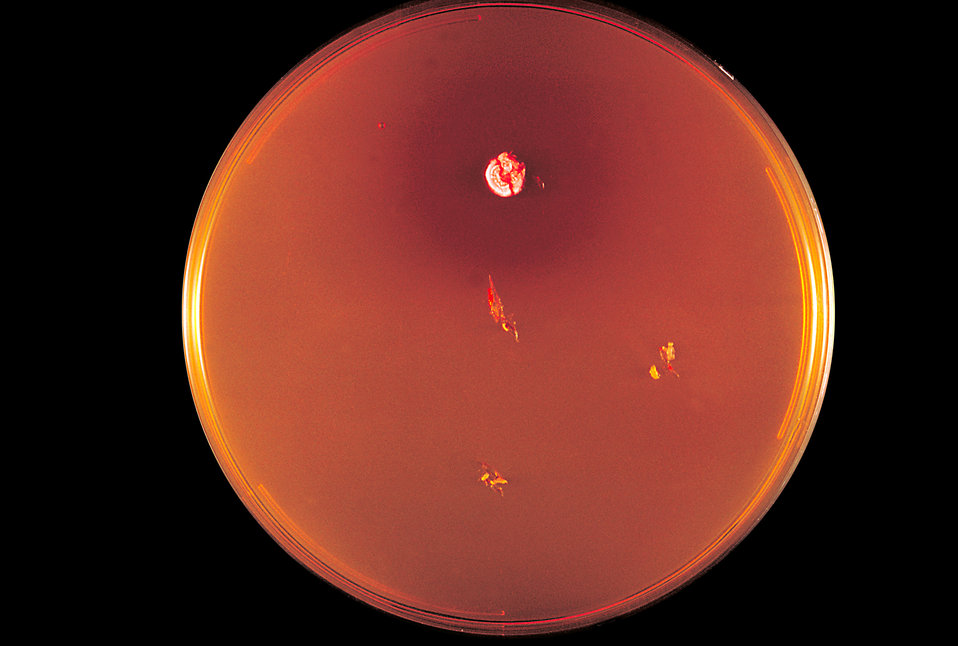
This image shows a DTM agar plate culture with colonies of the fungusTrichophyton concentricum.